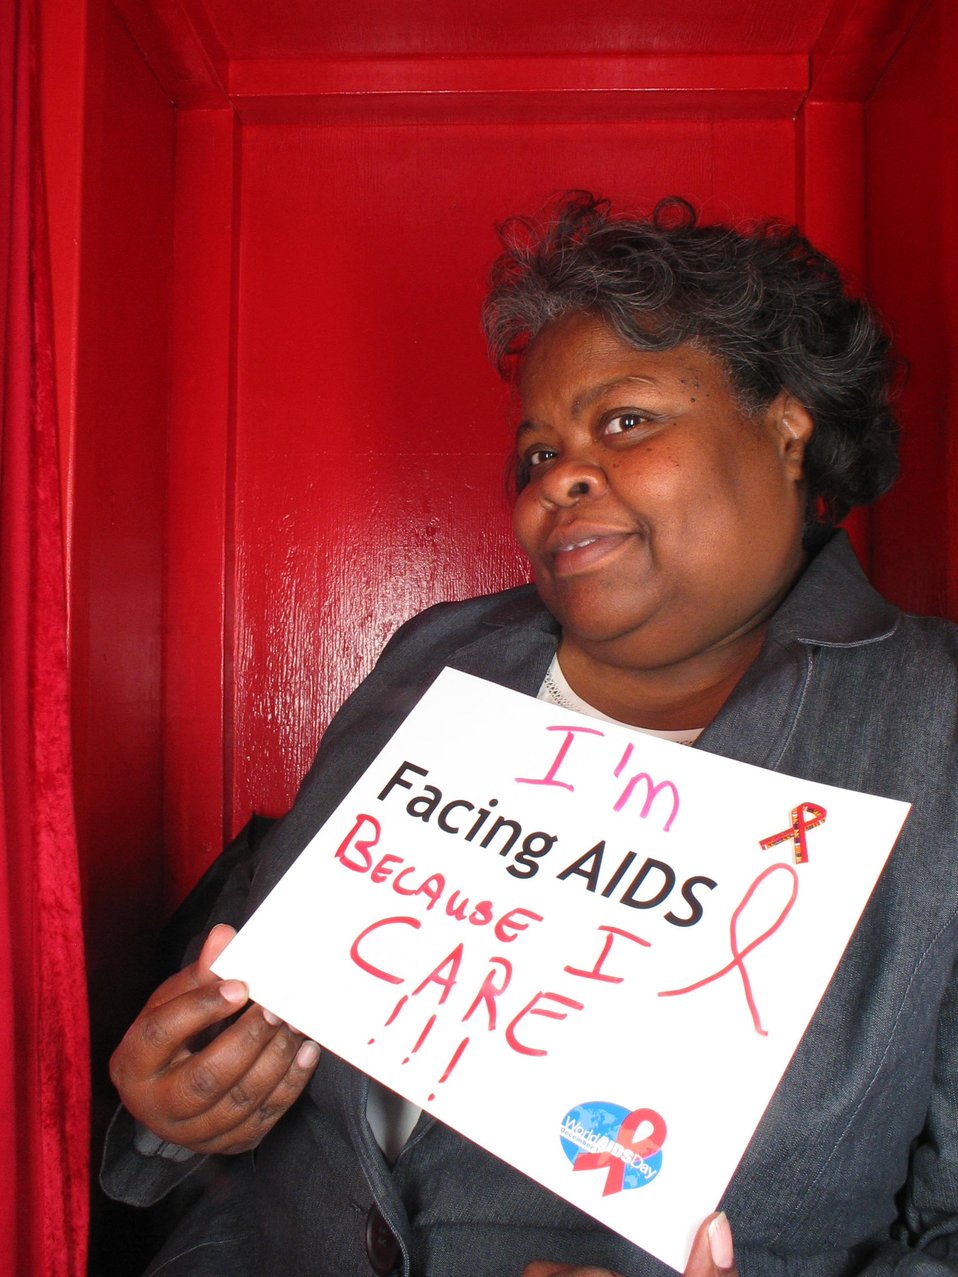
I'm Facing AIDS because I care.